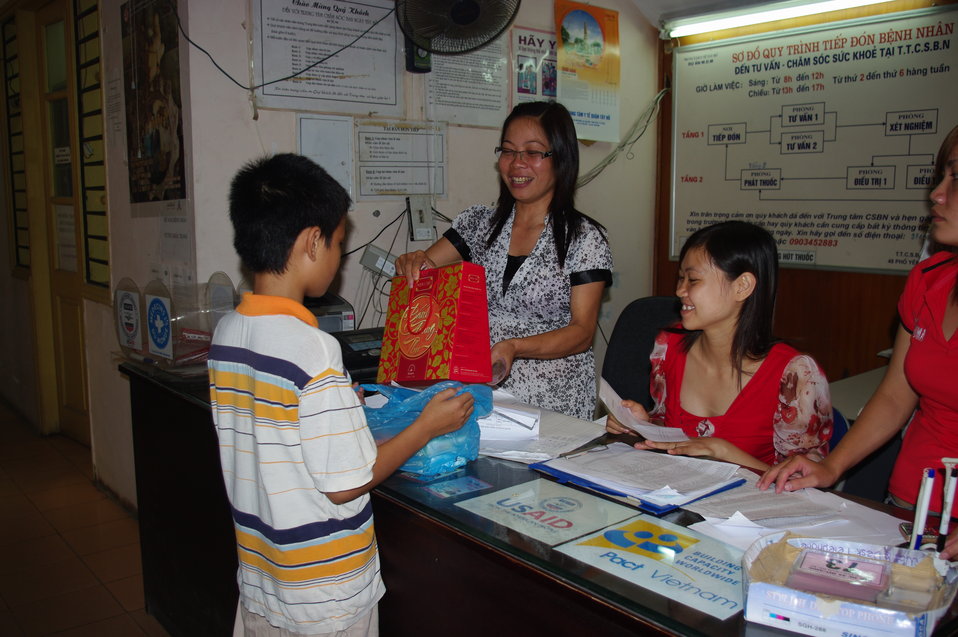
2010-09-Oprhans and vulnerable children receive free medical check-ups in Hanoi MdM DayCareRNyberg-54